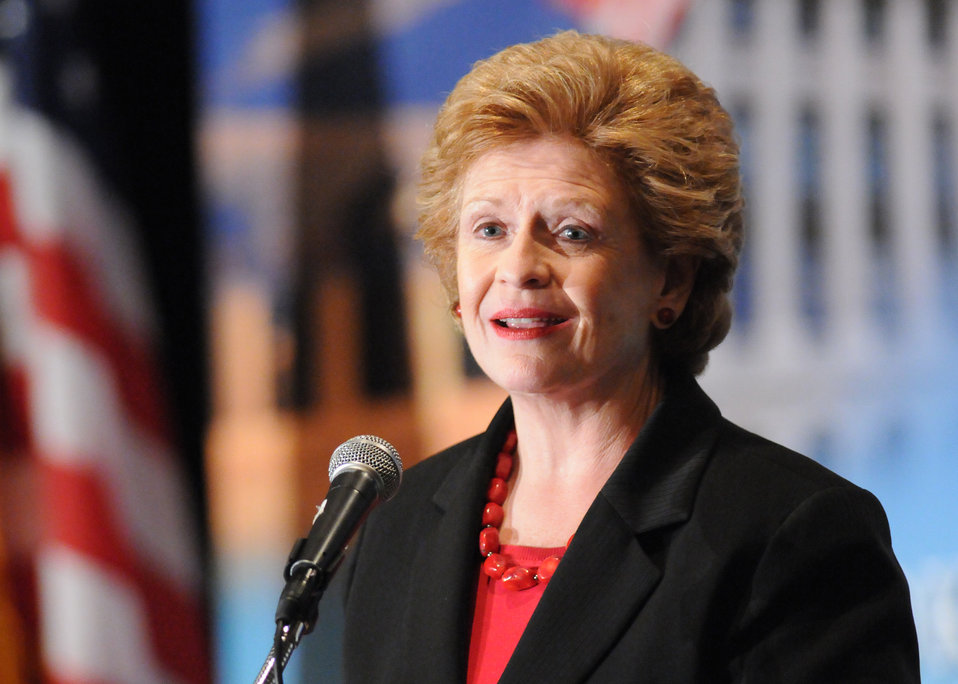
110224 OCE LSC Outlook Conf

Michigan Senator Debbie Stabenow, Chairwoman of the Senate Committee on Agriculture, Nutrition and Forestry, presented remarks as a distinguished speaker at the World Agricultural Outlook Board Forum, held in Arlington, VA, on Thursday, February 24, 2011.